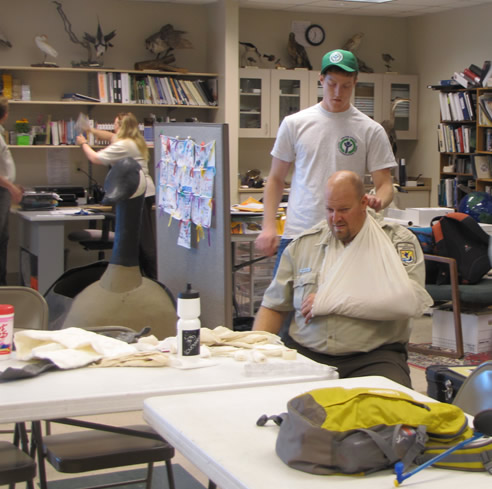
Learning How to Make a Sling

Youth Conservation Corp participant makes a sling for a law enforcement officer at Bear River Migratory Bird Refuge, part of First Aid certification training.